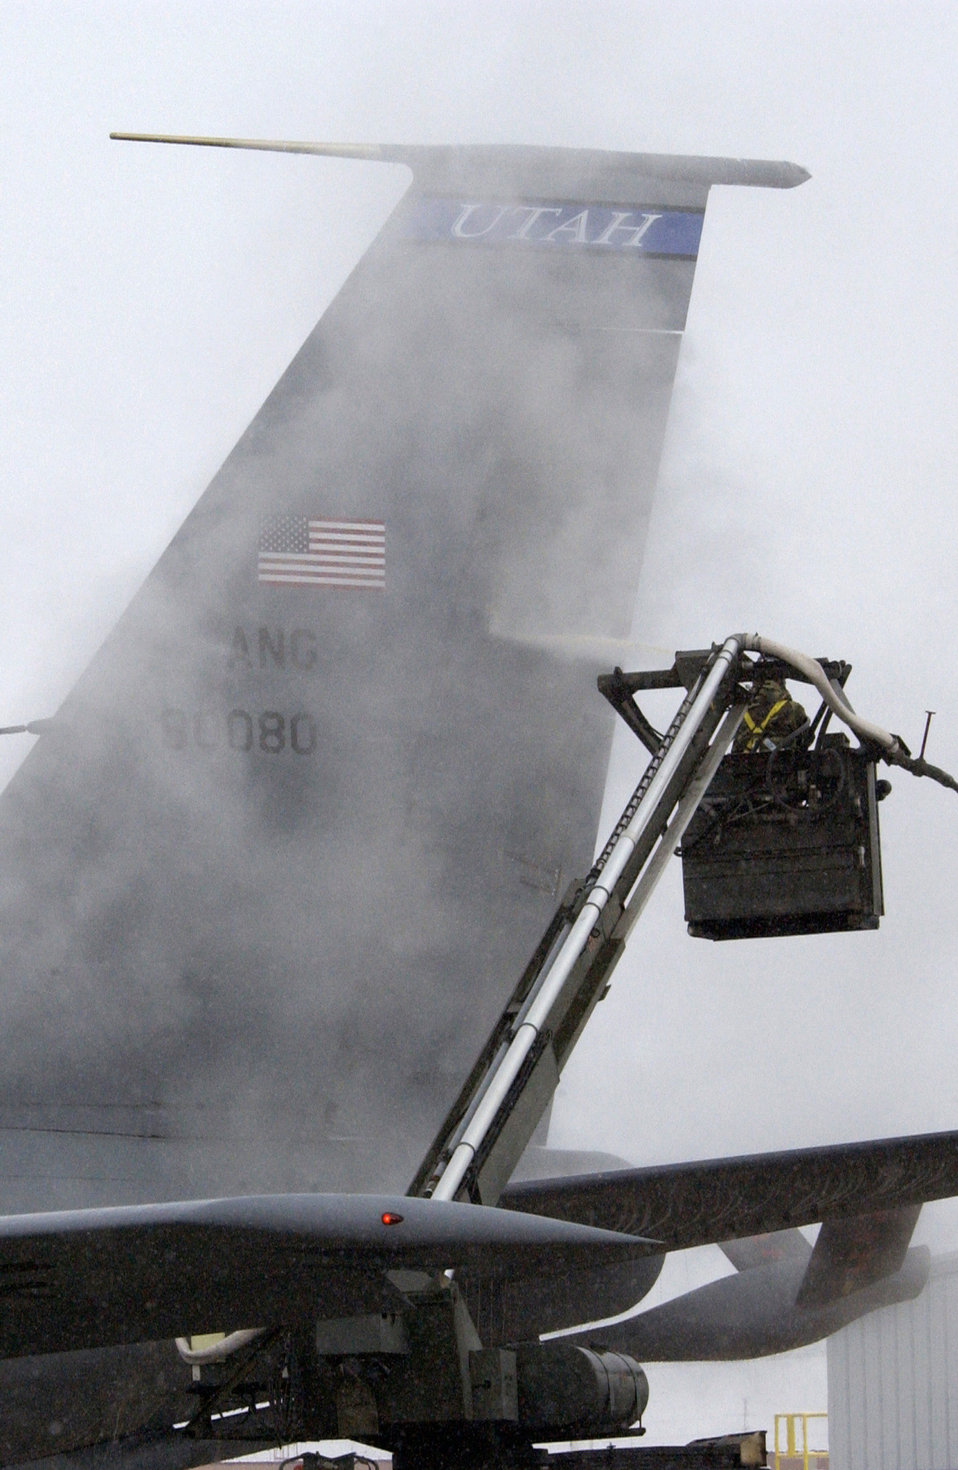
De-ice, then de-ploy

SALT LAKE CITY -- Crews of Utah Air National Guard’s 151st Maintenence Squadron here de-ice a KC-135E Stratotanker as the unit prepares to deploy overseas Feb. 25. Approximately 230 members of the Utah ANG deployed for a tour of duty that could last up to a year.